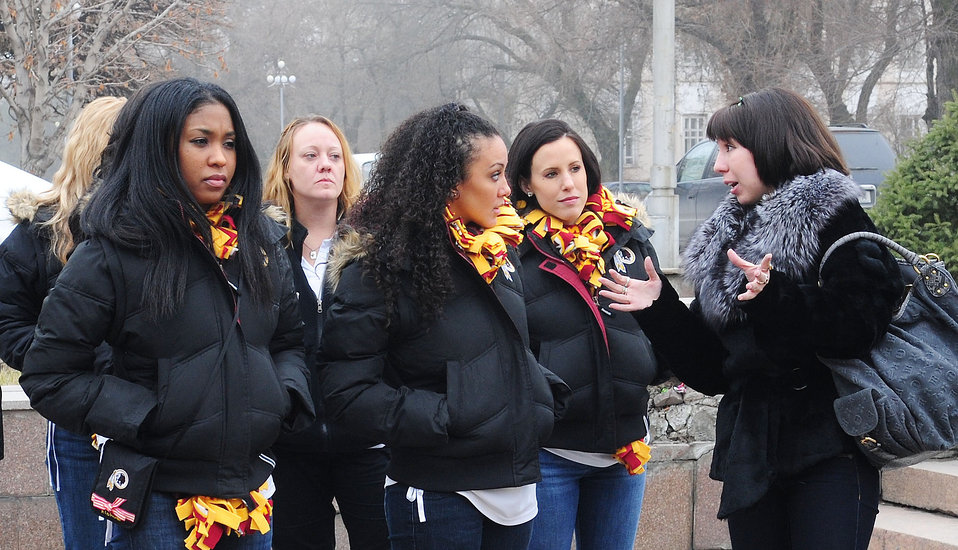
Cheers to Bishkek

Senior Airman Maria Gates speaks of the history and culture of the land to the Washington Redskins cheerleaders Jan. 27, 2010, on a tour of downtown Bishkek, Kyrgyzstan. Airman Gates is a 376th Air Expeditionary Wing translator and a native of Kyrgyztan.